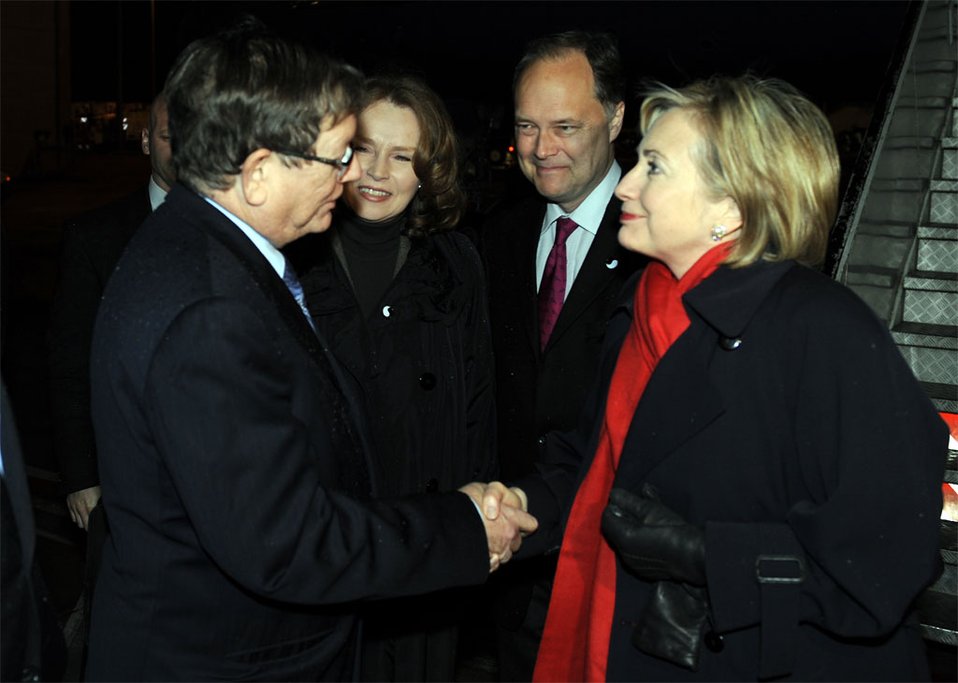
Secretary Clinton Arrives in Jerusalem

U.S. Secretary of State Hillary Rodham Clinton is being welcomed by Mr. Baruch Binah, Deputy Director General for the North American Department, Ministry of Foreign Affairs at Ben Gurion Airport, Israel March 2, 2009.